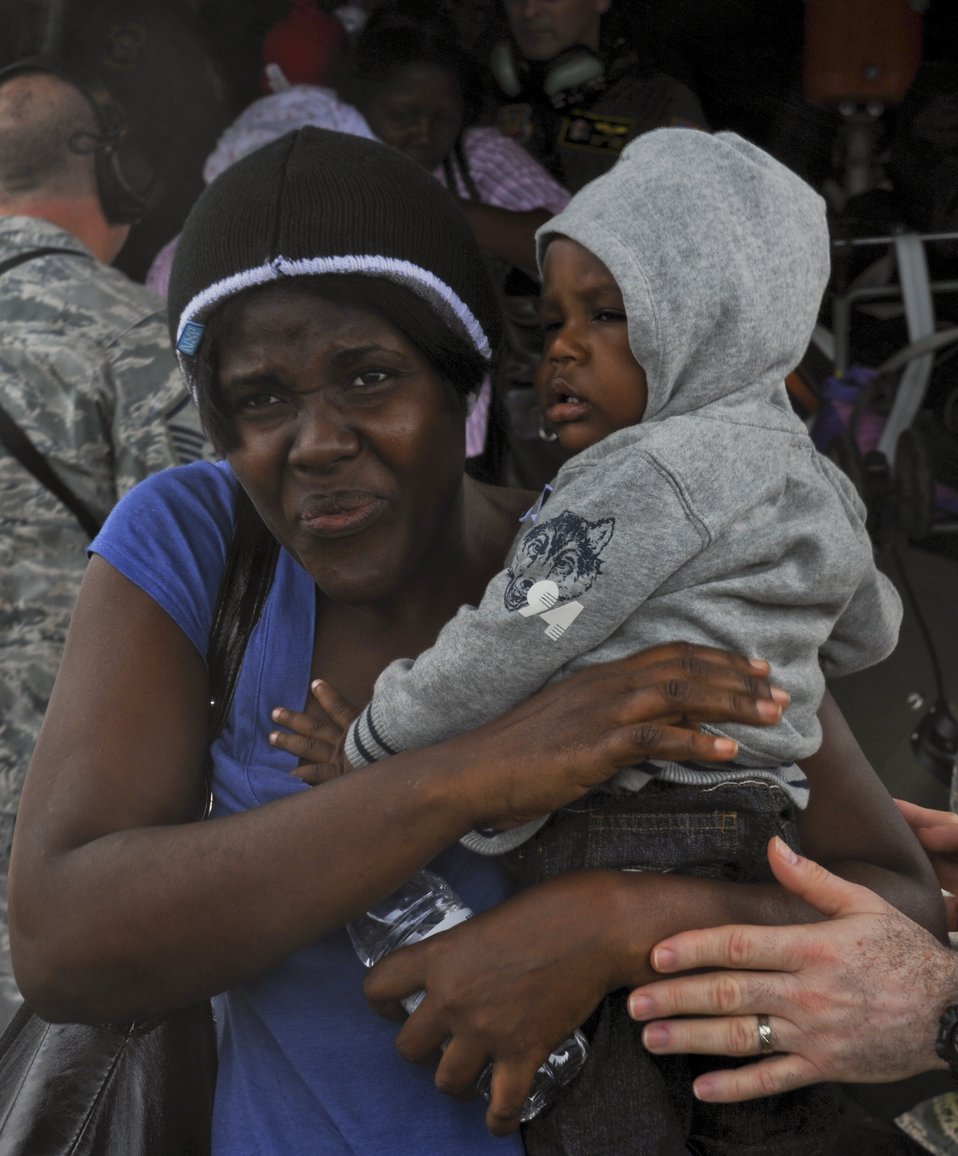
Haiti mission

U.S. citizens leave a Puerto Rico Air National Guard C-130E Hercules aircraft Jan. 17, that landed in San Juan, Puerto Rico. The American citizens were evacuated from Haiti where Airmen are playing an active role in support of the relief effort there in the aftermath of a devastating earthquake.